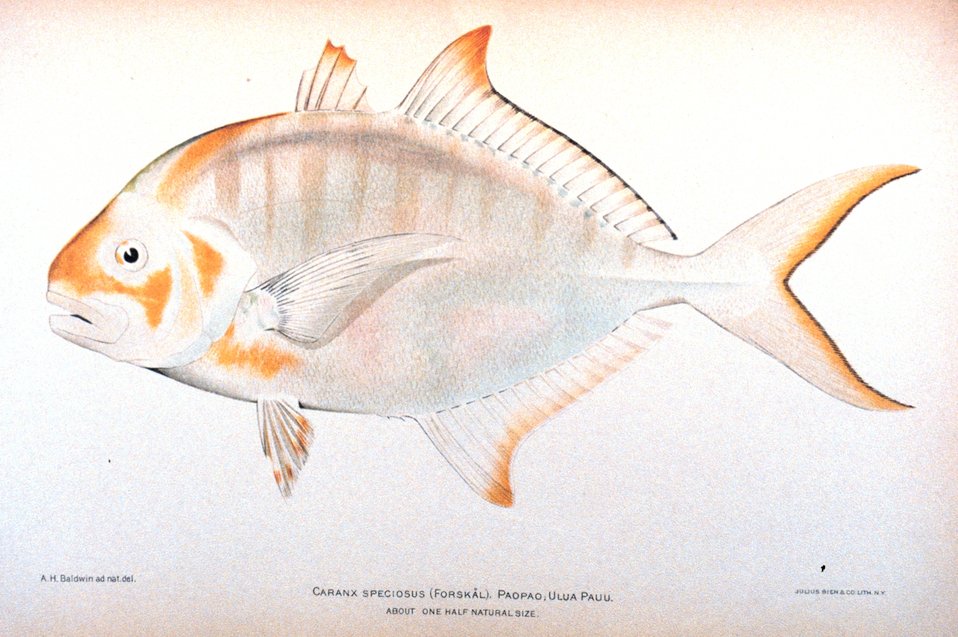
Caranx speciosus (Forskal). Paopao; Ulua pauu. In: 'The Shore Fishes of the Hawaiian Islands, with a General Account of the Fish Fauna', by David Starr Jordan and Barton Warren Evermann. Bulletin of the United States Fish Commission, Vol. XXIII, for 1903. Part I. P. 574, Plate XII.